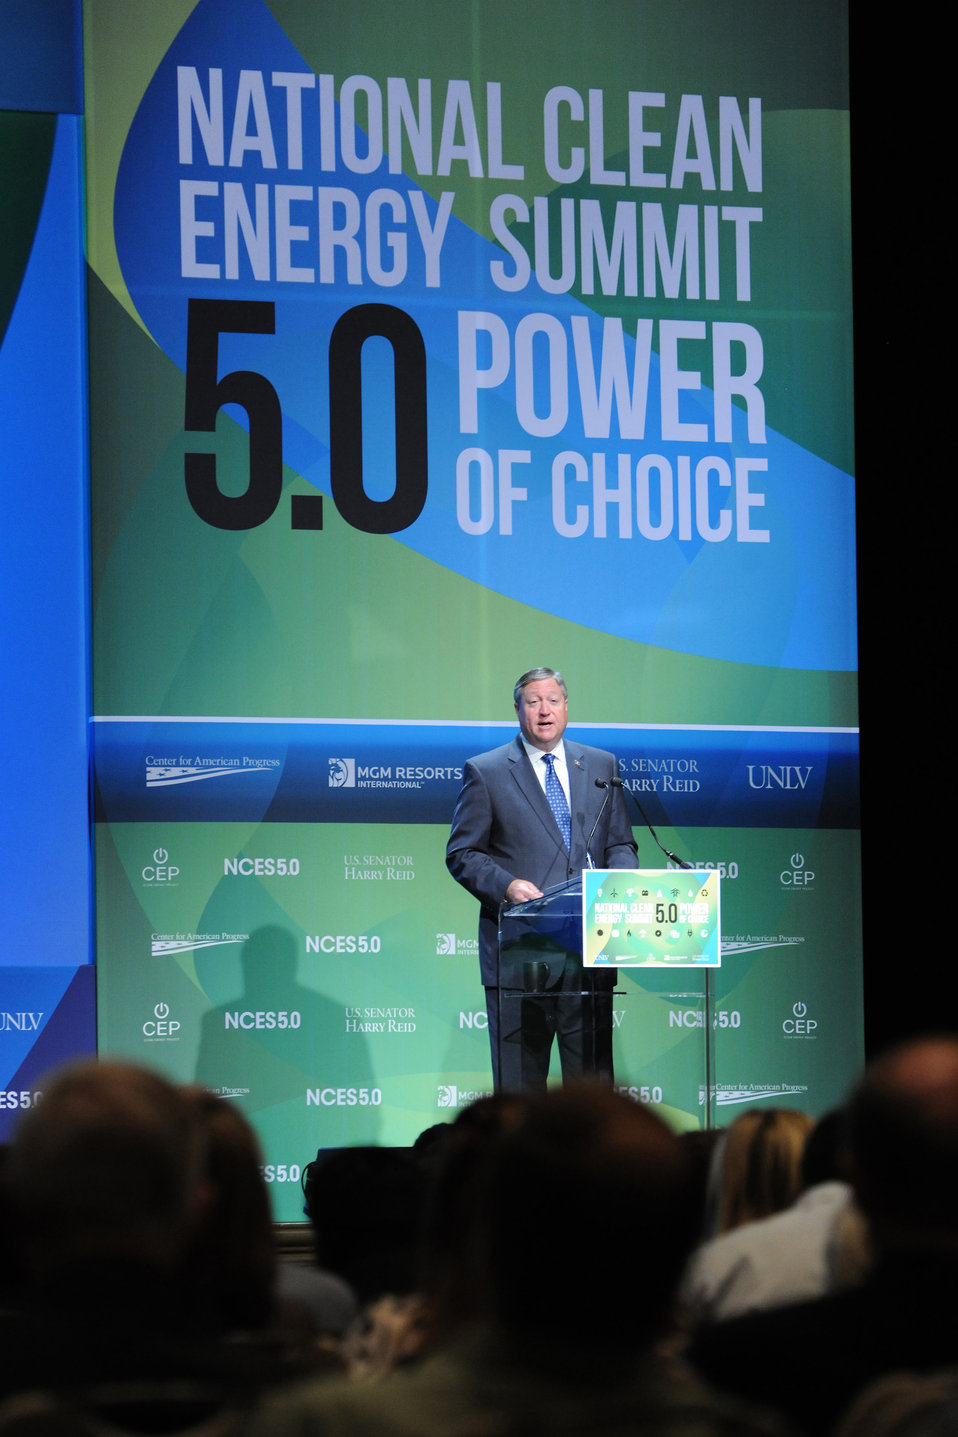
SecAF addresses clean energy summit

Secretary of the Air Force Michael Donley presents a keynote address on the Department of Defense's energy initiatives at the 2012 National Clean Energy Summit in Las Vegas Aug. 7, 2012. The secretary encouraged private industry and other government agencies to work together to create a more agile, lethal, adaptable and effective military force.